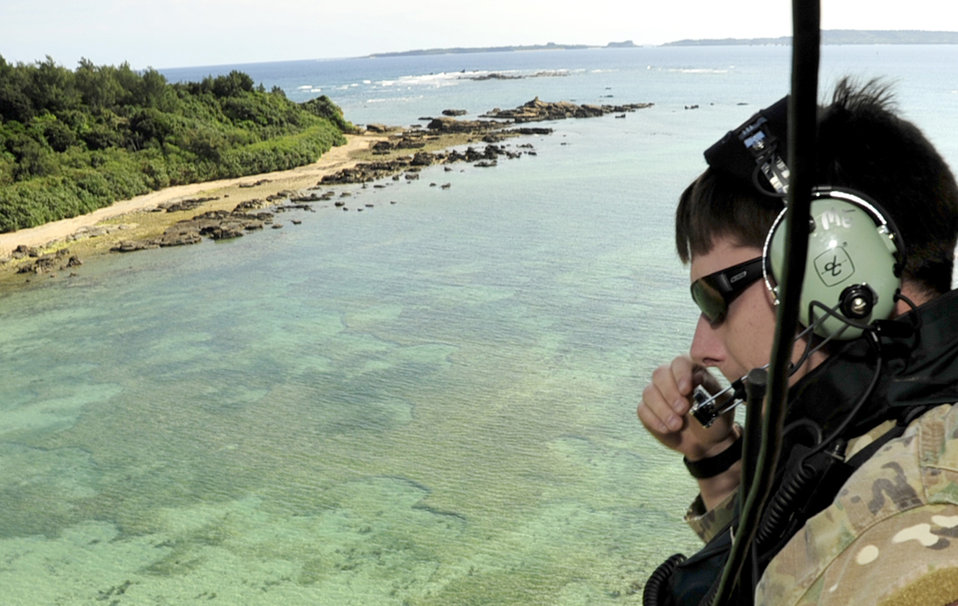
Keen Sword 2011

Senior Airman Issac Meese prepares to perform a simulated rescue during Keen Sword 2011 Dec. 6, 2010, in the waters near Okinawa. During Keen Sword 2011, units from the Army, Navy, Air Force and Marine Corps will conduct training with their Japan self-defense force counterparts at military installations throughout mainland Japan, Okinawa and in the waters surrounding Japan. Airman Meese is a pararescueman with the 31st Rescue Squadron.